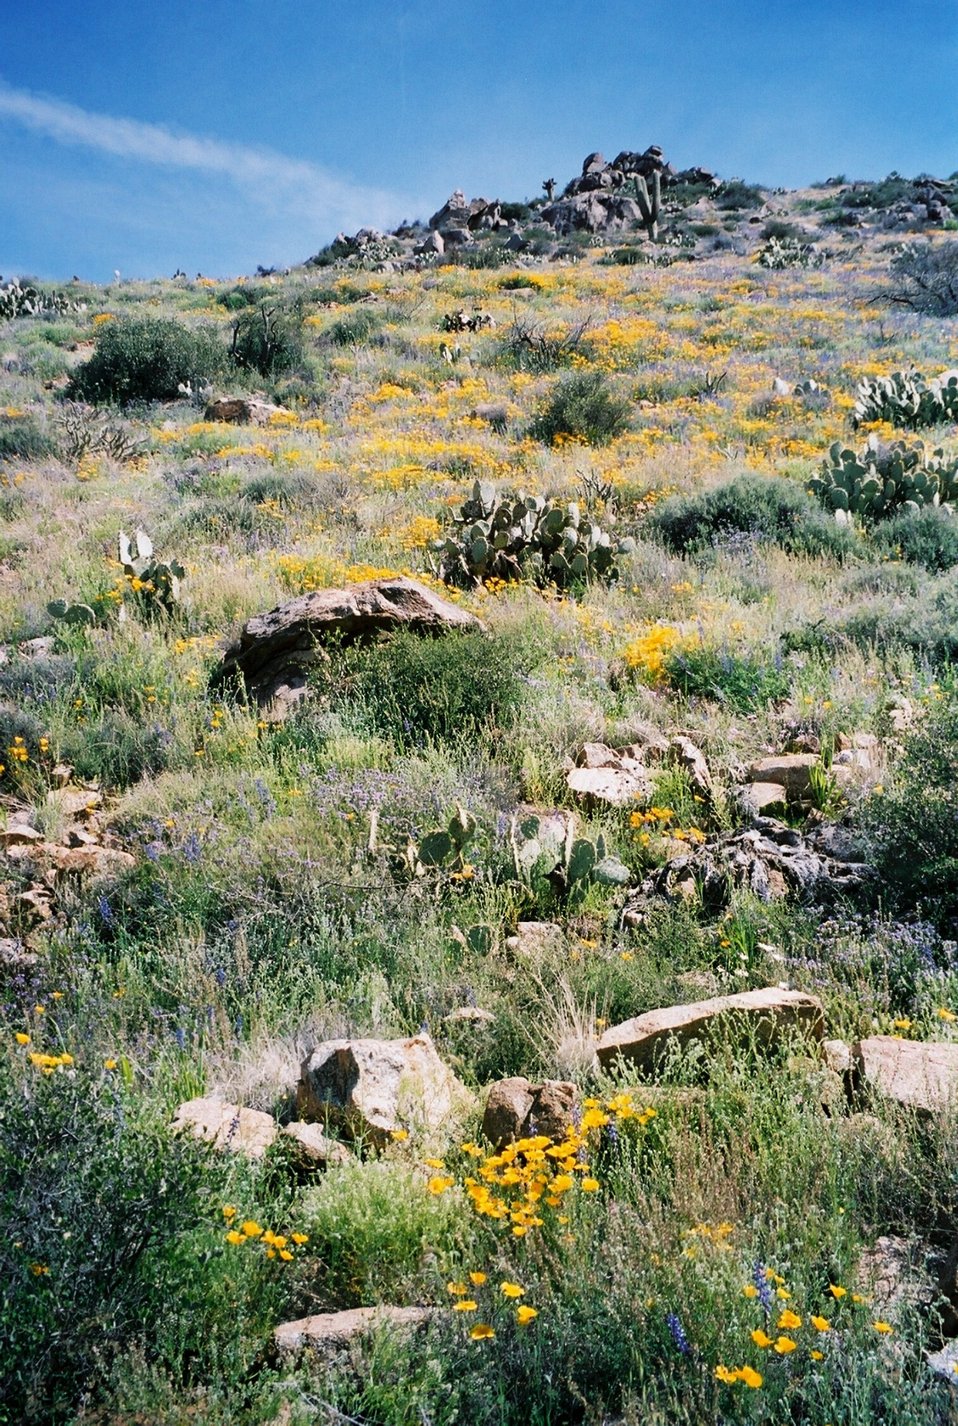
Many different kinds of beautiful wildflowers grow in the Agua Fria National Monument.